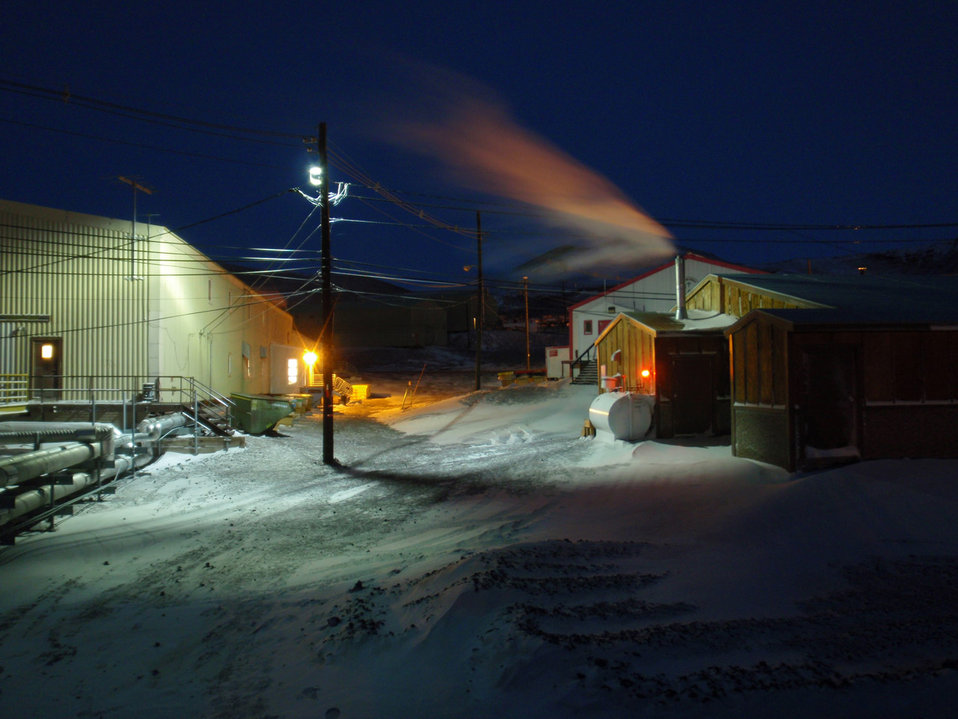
Gallagher's at dusk

Gallagher's bar and core building at mcmurdo station, antarctica.